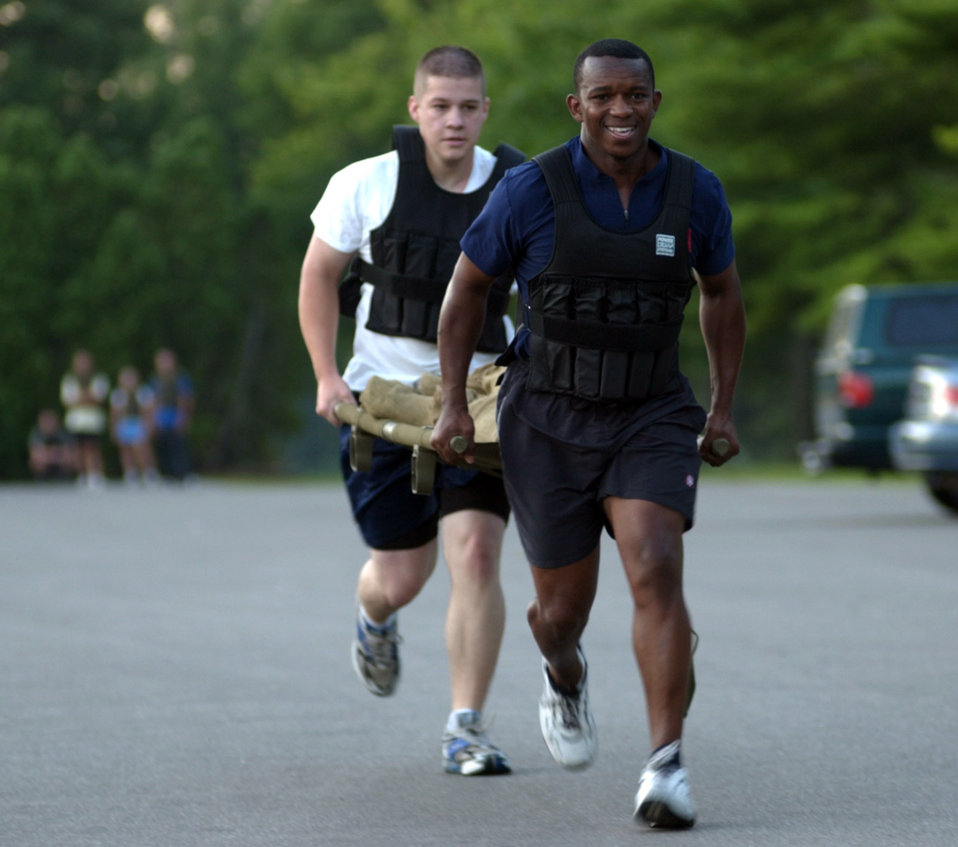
Airmen get in shape with boot camp aerobics

WRIGHT PATTERSON AIR FORCE BASE, Ohio -- Chief Master Sgt. Clint Allen (front) and Airman 1st Class Shawn Bishop carry a litter loaded with sandbags during a boot camp aerobics class here. The exercise helps Airmen get physically fit while doing tasks they may face during a deployment. This exercise simulated carrying an injured comrade to a helicopter in a war zone.